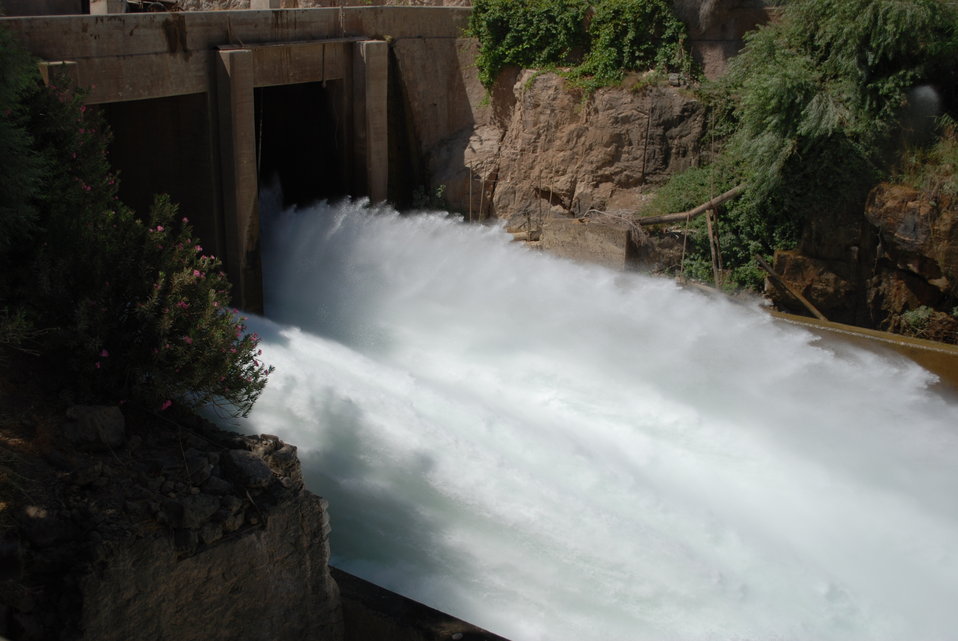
Kajaki